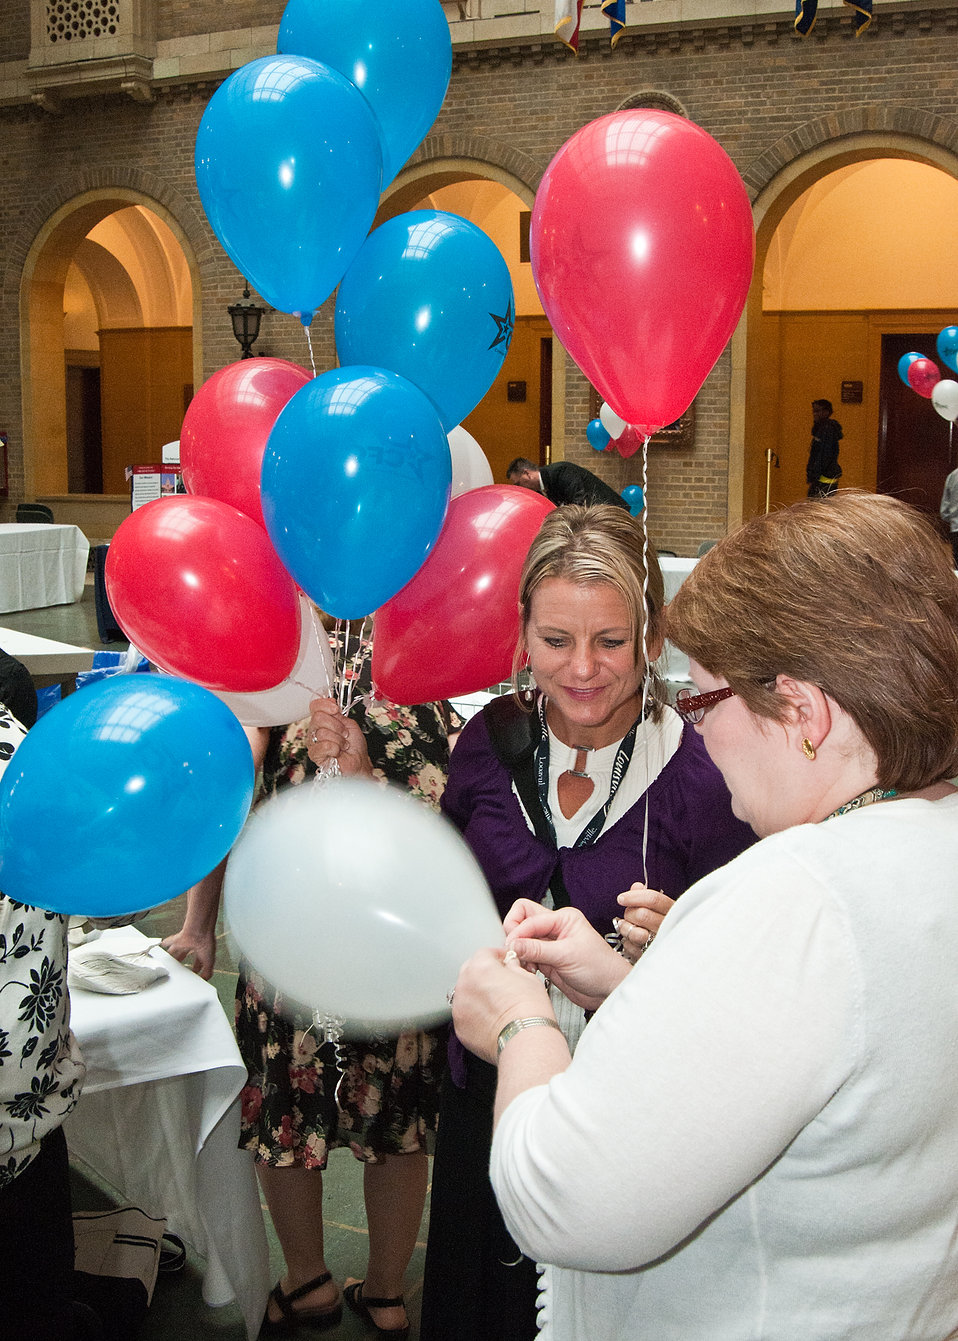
Preparation for the kick-off of the U.S. Department of Agriculture 2011 Combined Federal Campaign “Compassion of Individuals, Power of Community” at the USDA in Washington, DC, on Wednesday, September 21, 2011. The theme of the 2011 campaign is “Celebrating 50 Years of Caring, Serving and Giving.”